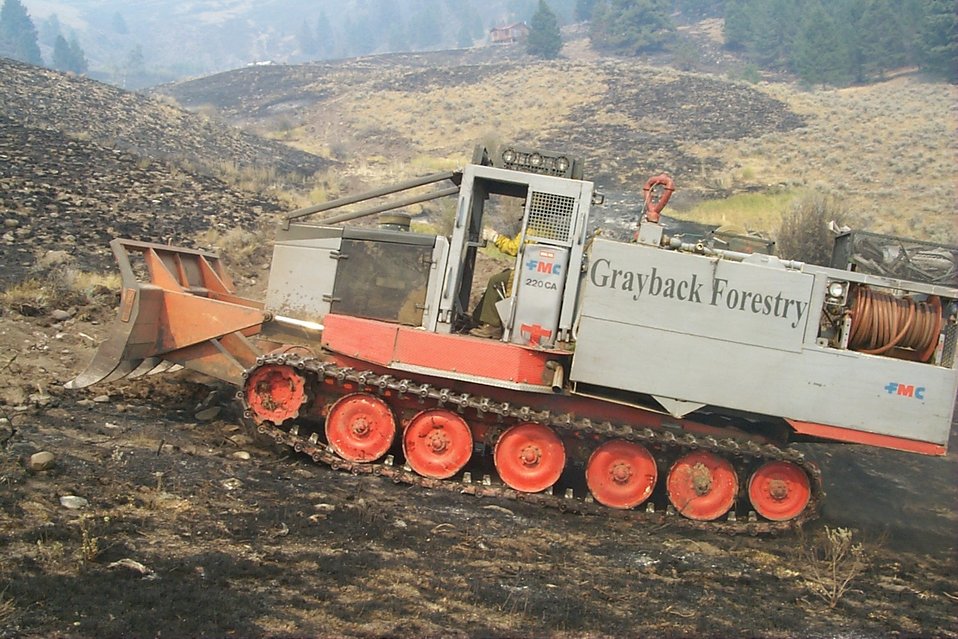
Dozer Fire Clearwater Fire Salmon Field Office USRD Upper Snake River District